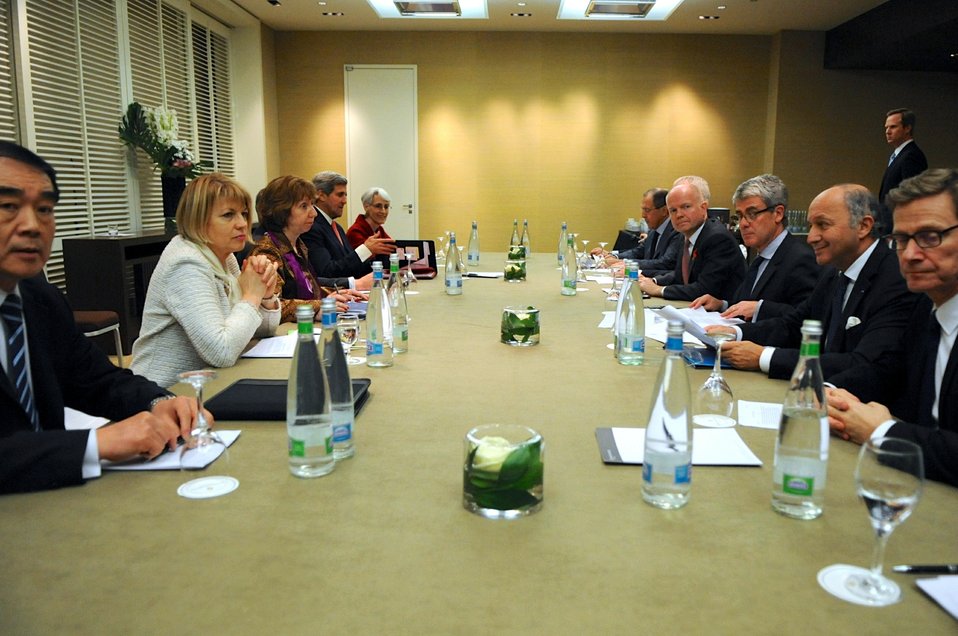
Secretary Kerry and Fellow P5 1 Members Discuss Iran in Geneva

U.S. Secretary of State John Kerry, as well as other foreign ministers and their top aides from the P5 1 members, meet with European Union High Representative Catherine Ashton in Geneva, Switzerland, on November 9, 2013, for a discussion focused on Iran's nuclear capabilities.